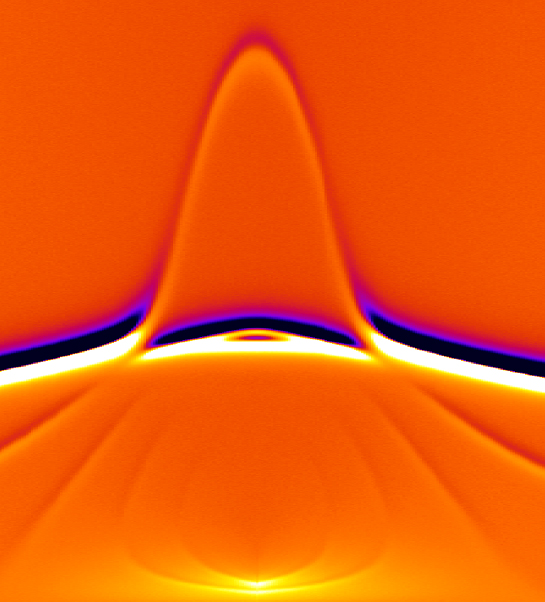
Nanowires

Spectroscopic image showing the microwave-frequency magnetic resonances of an array of parallel, metallic thin film nanowires ('stripes'). The peak in the center is due to resonances occurring at the stripe edges while the strong horizontal bar is due to resonances in the body of the stripes.